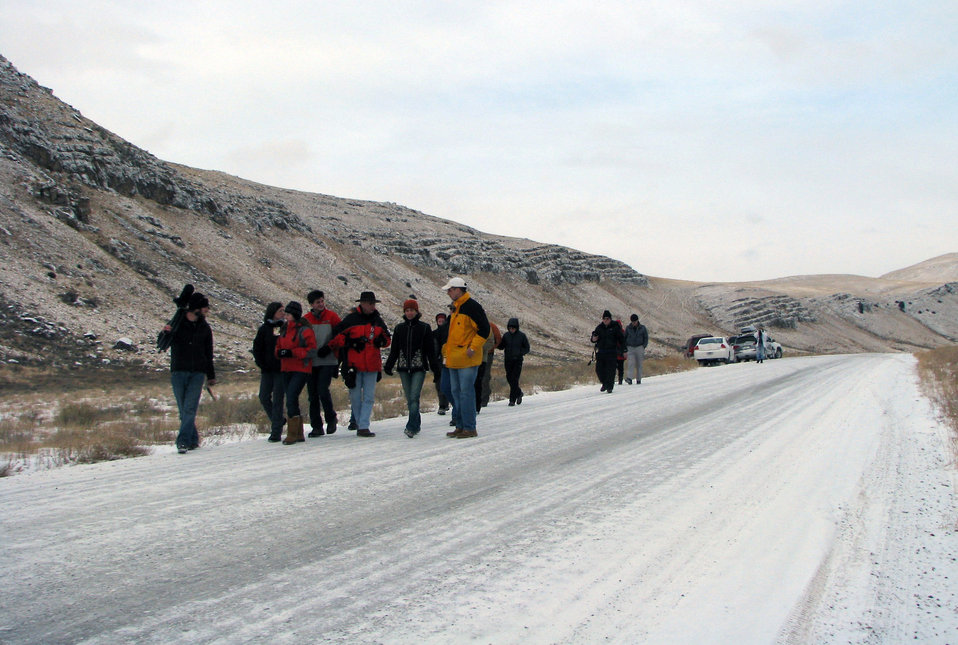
Safety Conscious

Safety is a concern on the Refuge Road due to the amount of vehicle and pedestrian traffic. Those interested in extended wildlife viewing opportunities are required to use established pullouts rather than stopping in the road.